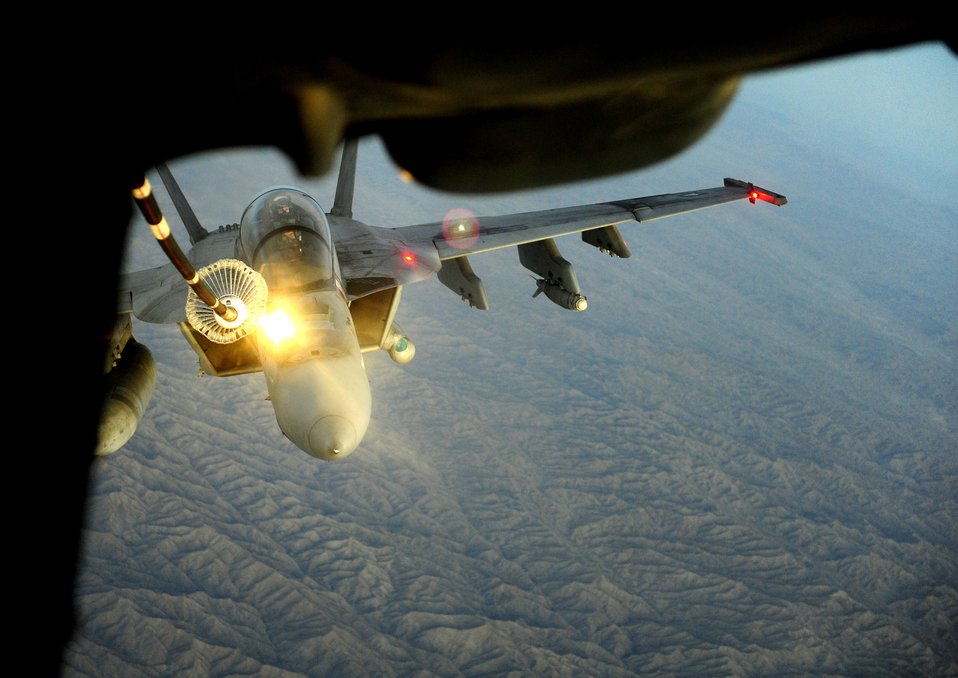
Refueling the joint fight

A KC-10 Extender refuels a U.S. Navy F/A-18 Hornet in support of Operation Enduring Freedom while deployed Nov. 25, 2010, over the mountainous terrain in Southwest Asia. The KC-10 is from the 908th Expeditionary Air Refueling Squadron.